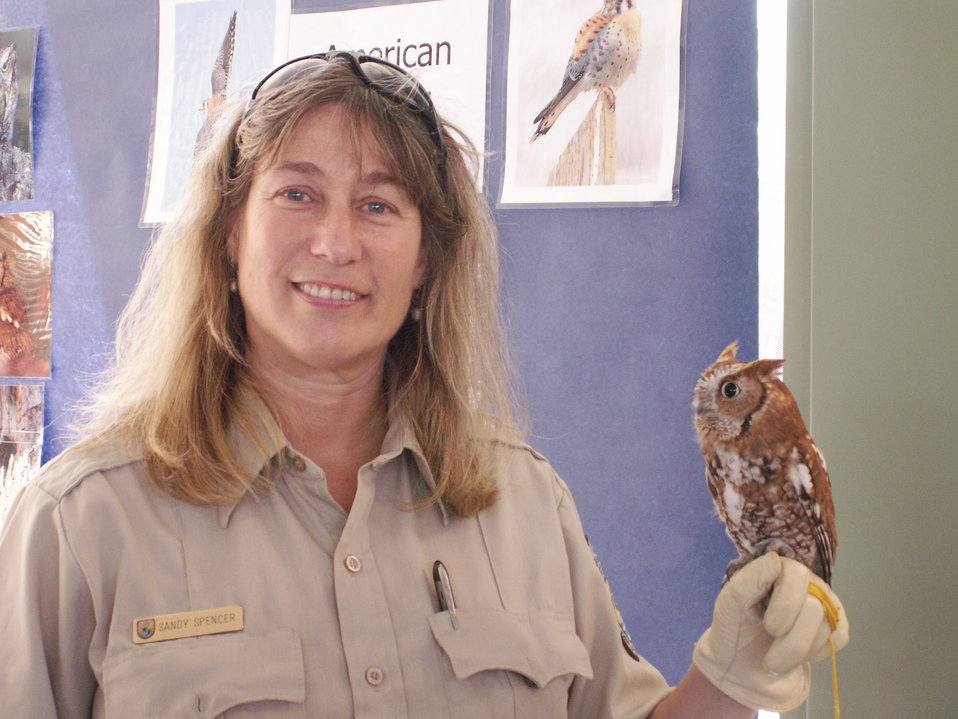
Sandy Spencer and screech owl

Laurel, MD: Wildlife Biologist Sandy Spencer of Patuxent Research Refuge presents an Eastern screech owl at the Patuxent 75th anniversary.